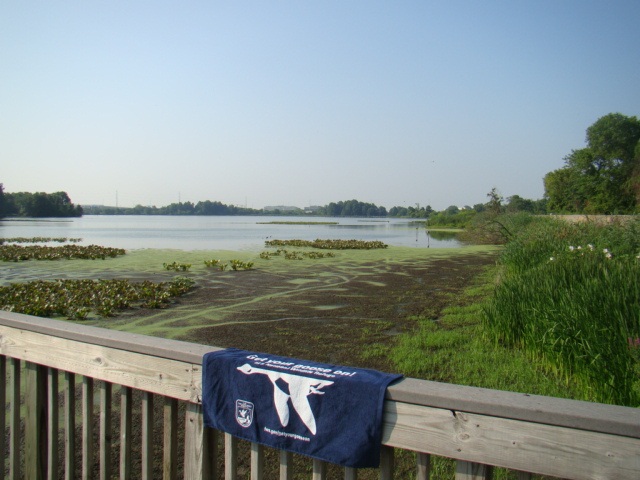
Get Your Goose On!

Impoundment lookout at John Heinz NWR. GYGO!